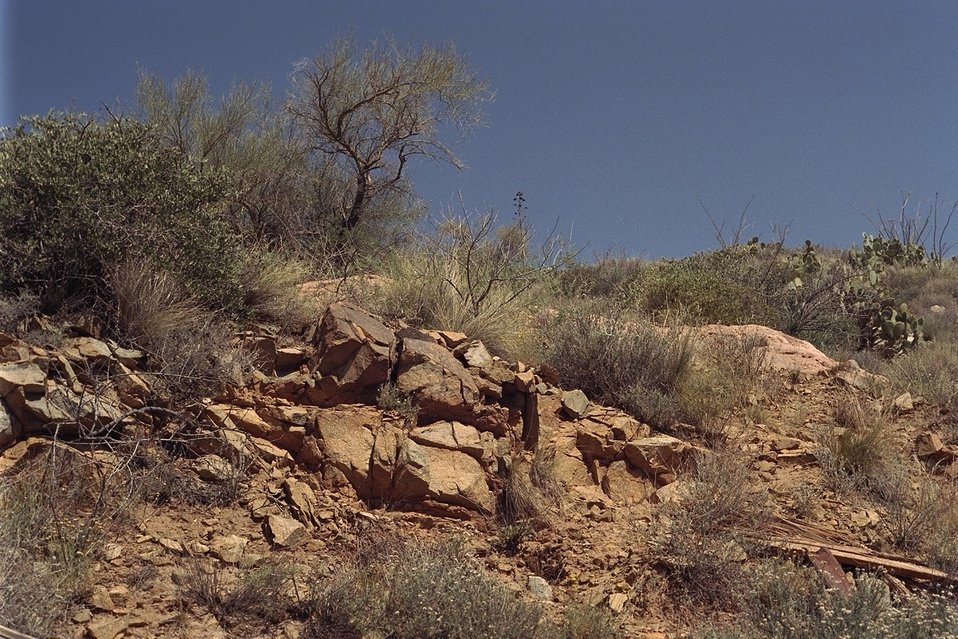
Rocks and Trees on the side of a hill in the Agua Fria National Monument.